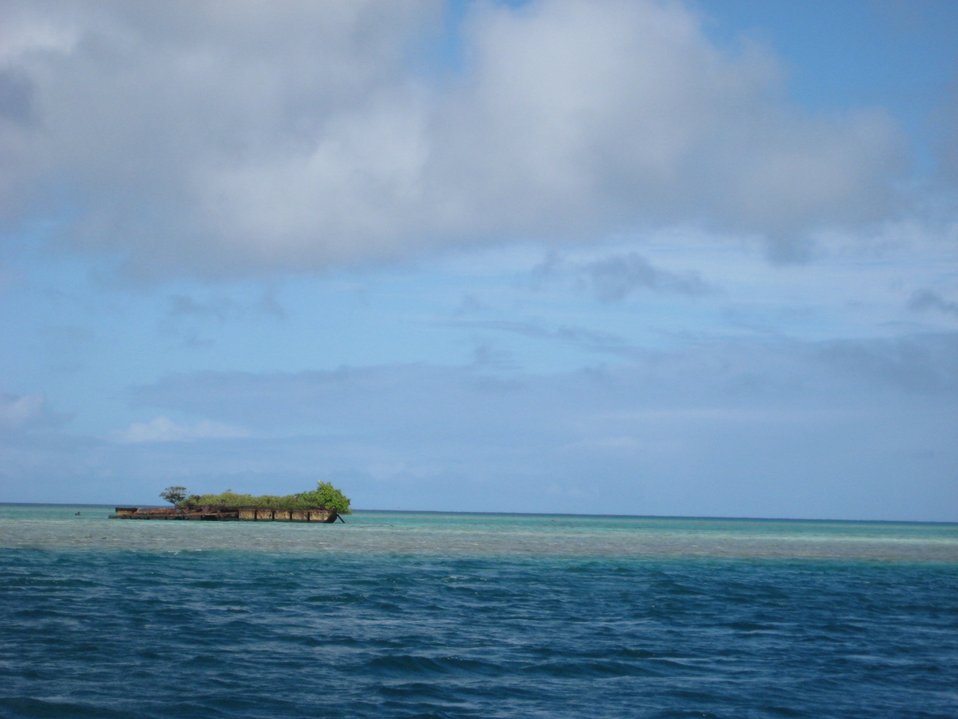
A deserted barge left on the reef which has become a vegetated islet.